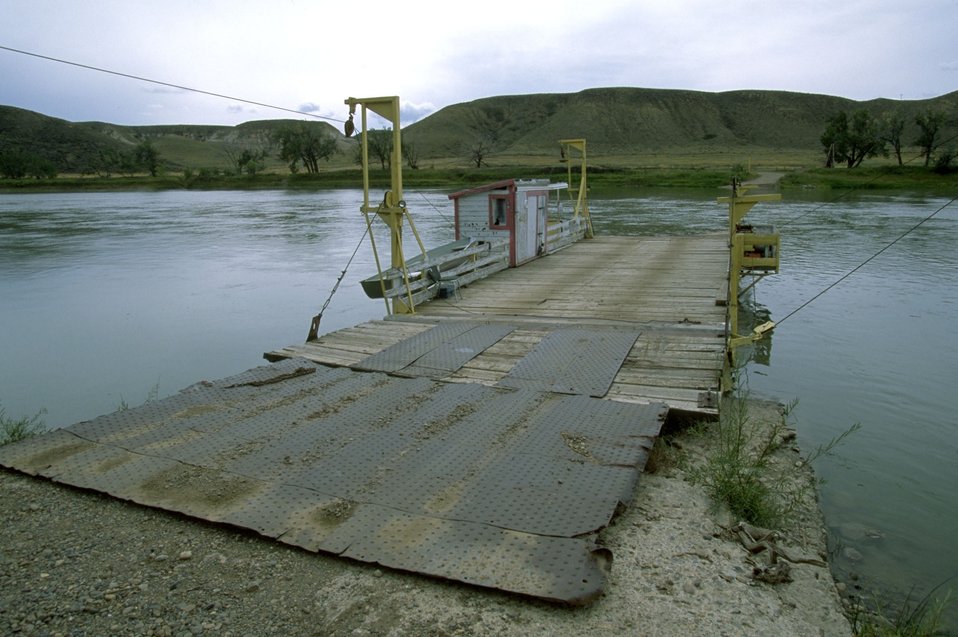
Virgelle Ferry on Upper Missouri River near Loma